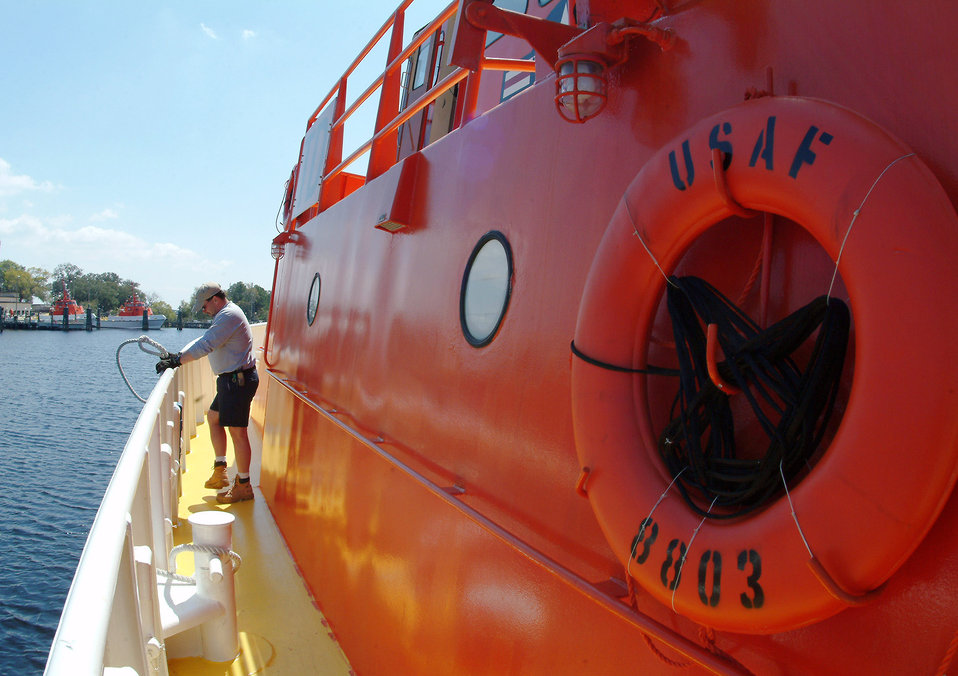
Air Force's navy

John Wise prepares to approach the docks March 26 at Tyndall Air Force Base, Fla. The boat he is on is just one of three 120-foot sea vessels owned by the Air Force. The other two can be seen at the docks in the distance. Mr. Wise is a 82nd Aerial Targets Squadron contractor.